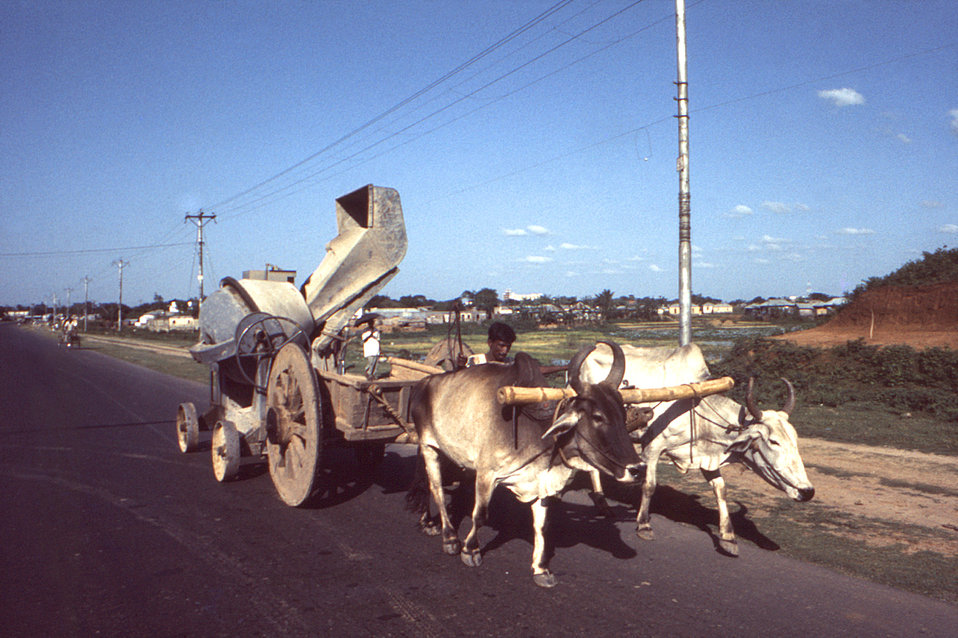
Photographed sometime in the early 1970s, during the worldwide smallpox eradication campaign, this image depicted a roadway on which an ox-drawn cement mixer was being drawn through an unknown Bangladesh township.